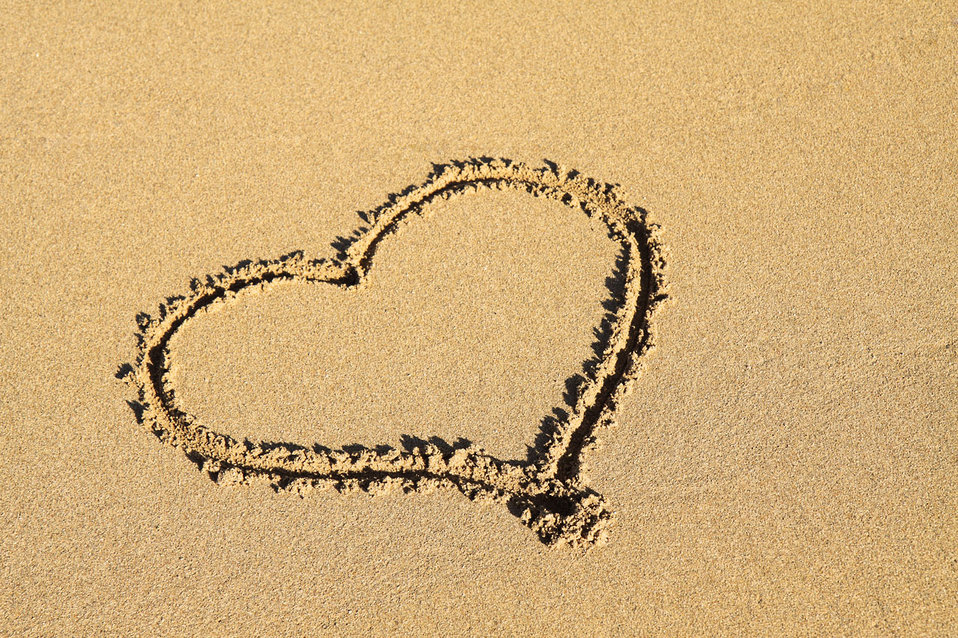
Heart in sand background.